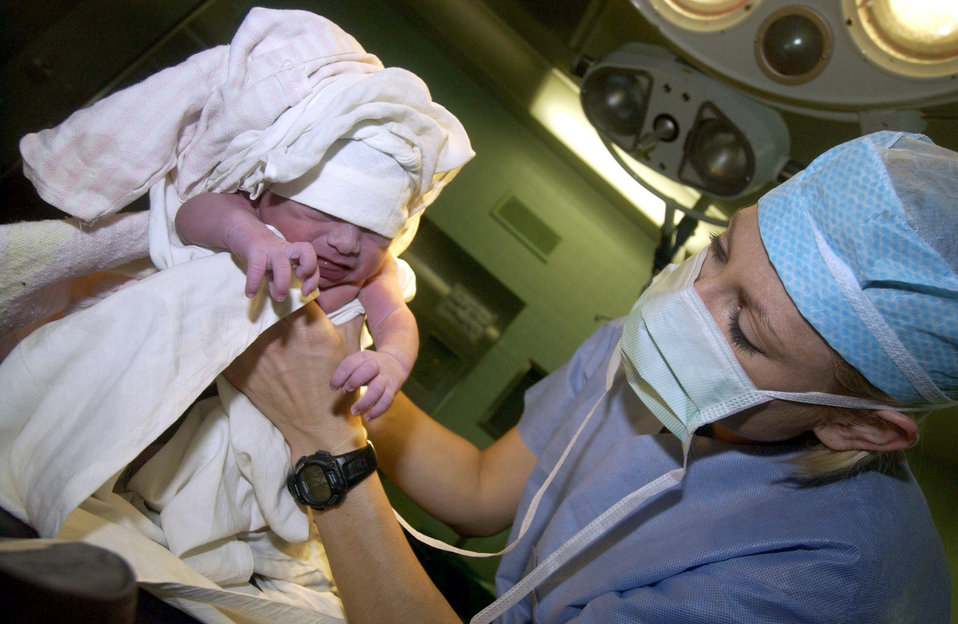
Iraqi Freedom

KIRKUK AIR BASE, Iraq -- Capt. Amber Hosier examines a 3-hour-old Iraqi girl here Dec. 9. The baby was born without a fully formed trachea and esophagus. Local Iraqi doctors combined with doctors from the 250th Forward Surgical Team to perform a procedure that could save the infant’s life.